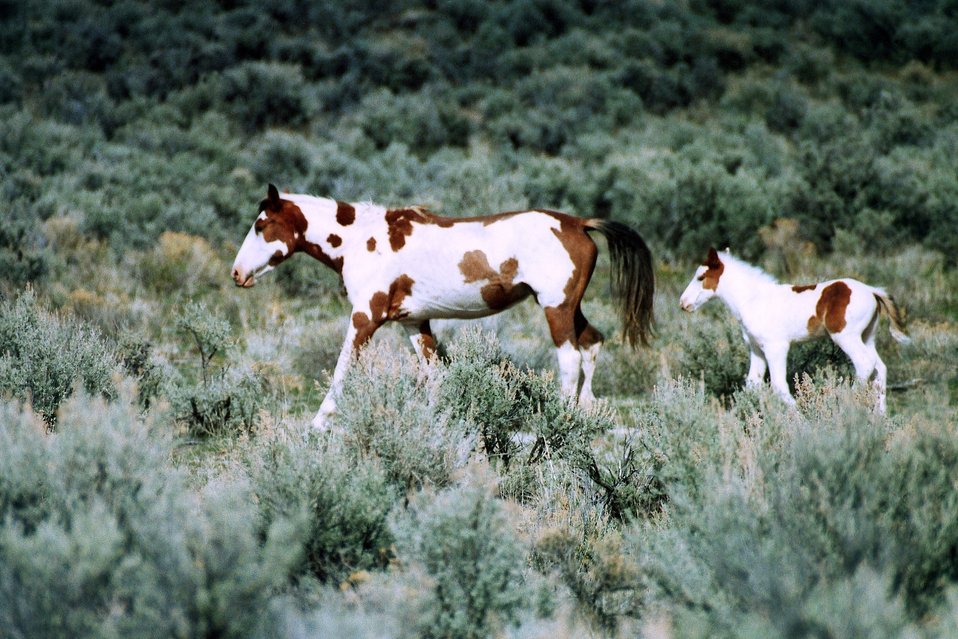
Medium shot of a mare and her foal.